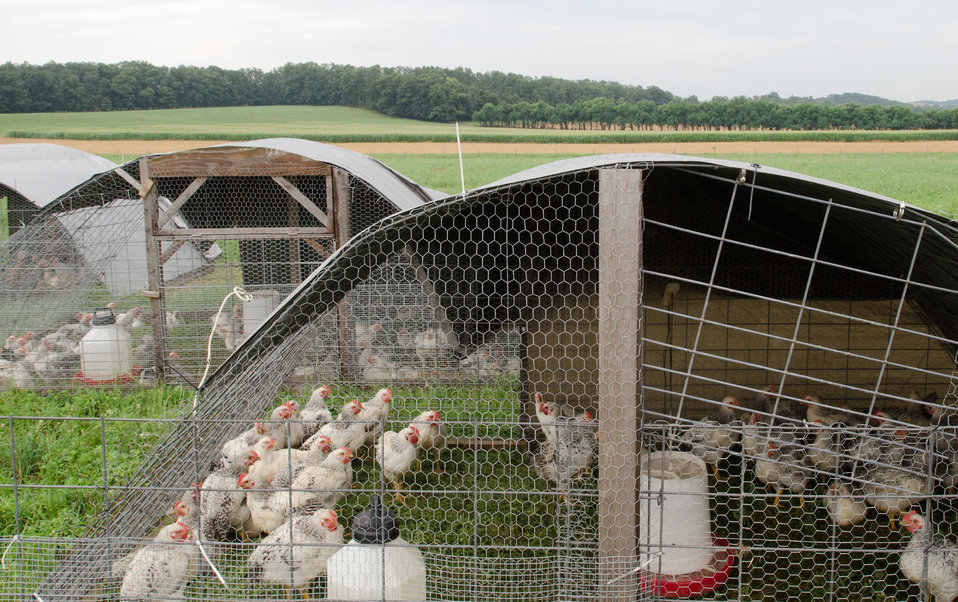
Broiler chickens and turkeys graze on organic pastures and live in pens that protect them from predators, direct sun light, and wind at Nick’s Organic Farm, owned by Nick Maravell in Adamstown, MD on Friday, July 12, 2013. The enclosures are light enough to be moved by hand, each day, one consecutive section at a time. The grazing trail can be seen behind the wire enclosure. This allows the pasture to easily recover from the grazing (just beyond the grazed area is the recovering grazing path a few weeks earlier). The farm produces Black Angus beef, chicken, turkey, eggs, hay, soybeans, corn, alfalfa, orchard grass, rye; and other crops. The cattle are100% grass-fed receiving certified organic pasture, certified organic hay (in winter), water and mineral salts mixed with sea kelp. The cattle are not fed hormones, antibiotics or animal products. Poultry feed from grain is ground from organic grain. The poultry also graze on organic pastures. The farm has conducted on-farm research with federal, state and non-profit agencies to refine organic practices. An organization such as the U.S. Department of Agriculture (USDA) Agricultural Research Service (ARS) center in Beltsville has been able to conduct research to improve organic crops and to breed and manage the cattle so that they have.